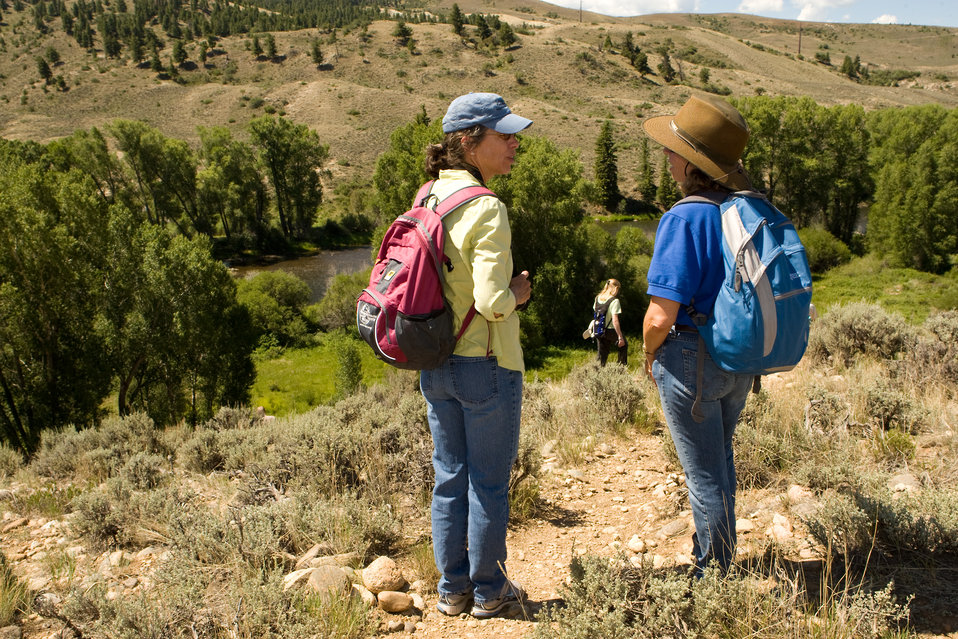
Colorado Rare Plant Conservation Initiative

The Colorado Rare Plant Conservation Initiative (RPCI) is a partnership of 23 statewide and regional agencies, private organizations, and academic institutions working to conserve 121 rare plants in Colorado. As part of these efforts the group developed the Colorado Rare Plant Conservation Strategy, developed Best Management Practices to reduce energy development impacts, addressed climate change, and developed focused strategies for the conservation of individual species at eight priority landscapes. The group has also worked to coordinate volunteer efforts for plant conservation across the state.